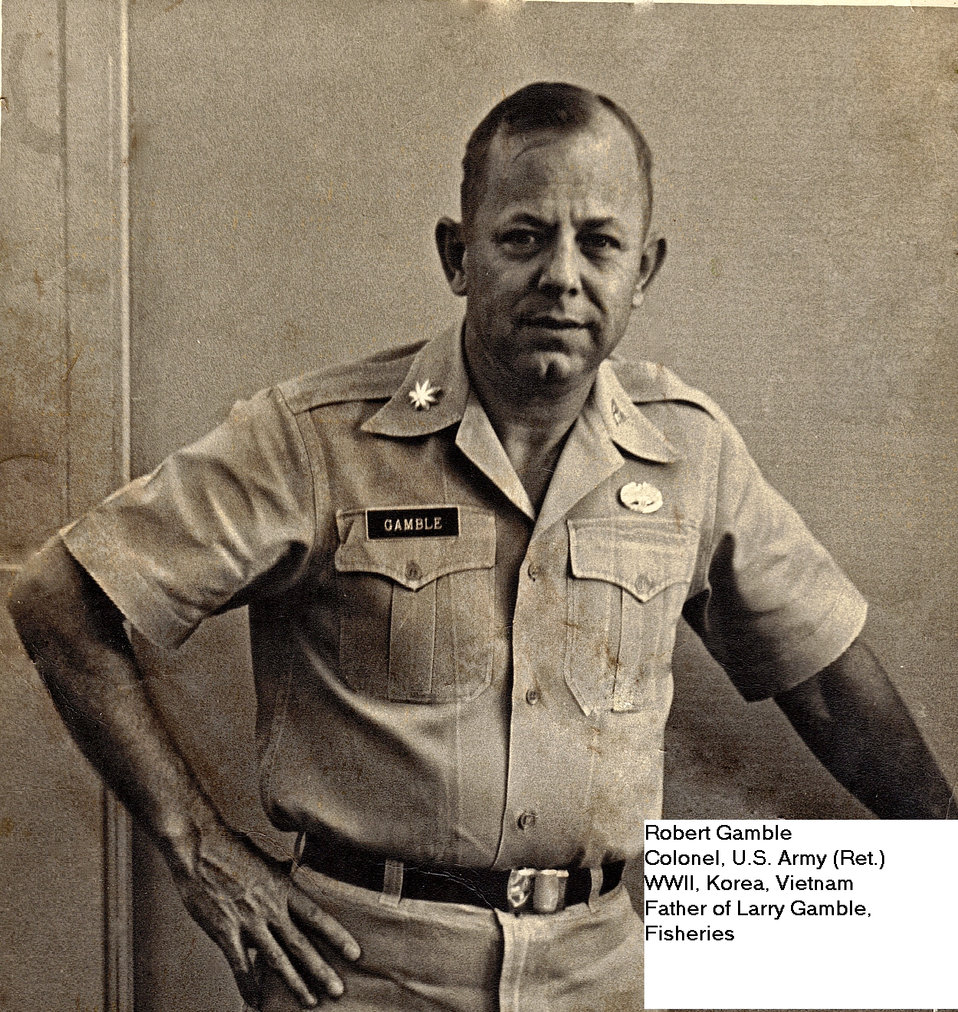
Robert Gamble is a retired Colonel for the Army and served in WWII, Korea, and Vietnam and is the father of Larry Gamble in the Region 6 Fisheries Program.